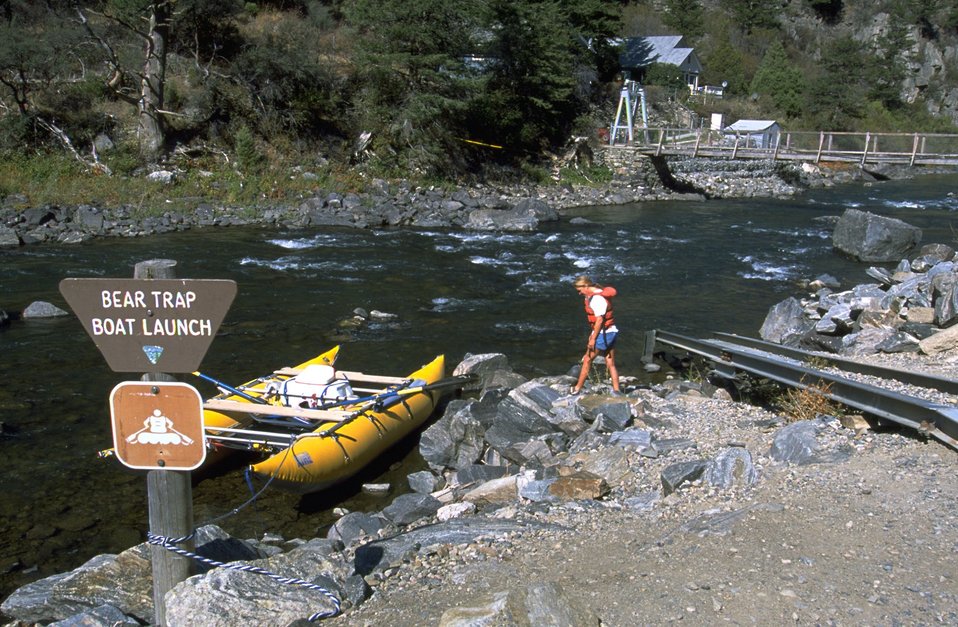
Bear Trap Boat Launch - Cataraft in the water